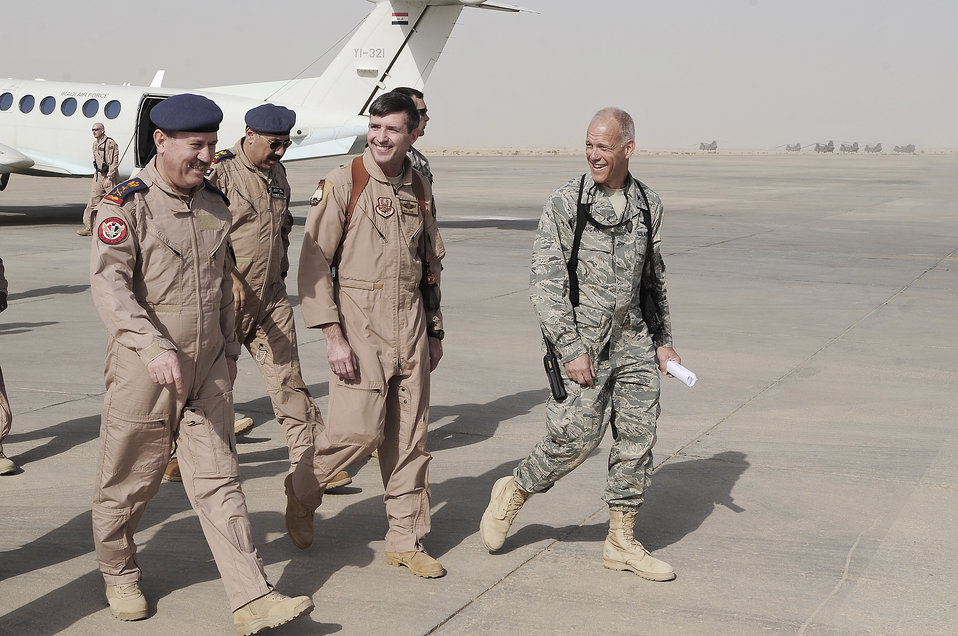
Iraqi, U.S. Air Force work hand in hand to support drawdown of forces

Iraqi air force Commander Staff Lt. Gen. Anwar Hamad Amen Ahmed, Maj. Gen. Robert Kane and Col. Glen Apgar converse during the two general's visit Sept. 24, 2009, at Ali Base, Iraq. General Kane is the director, Iraq Training and Advisory Mission - Air Force, and Colonel Apgar is the 407th Air Expeditionary Group commander.